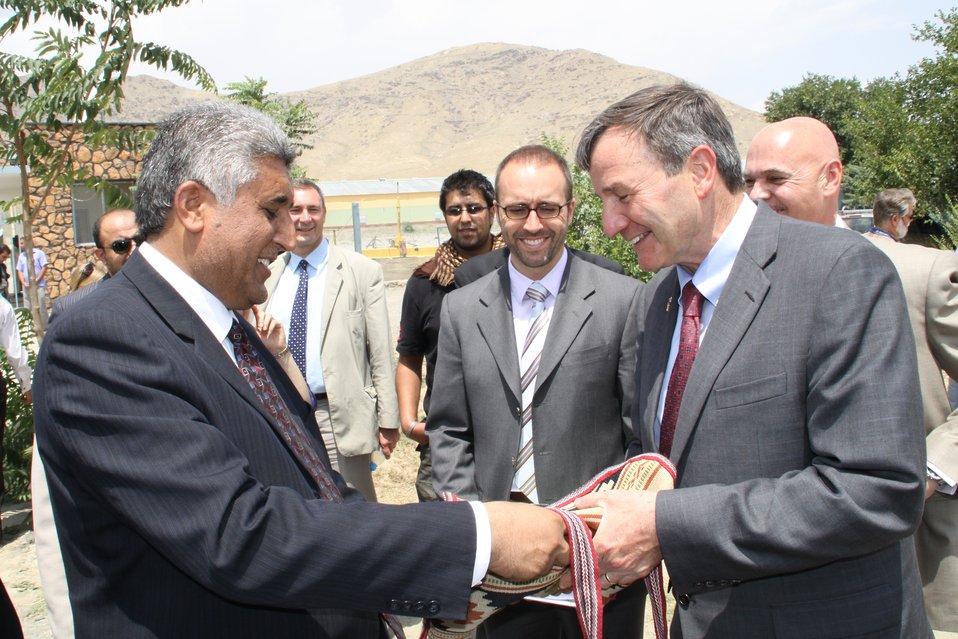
Badam Bagh Farm